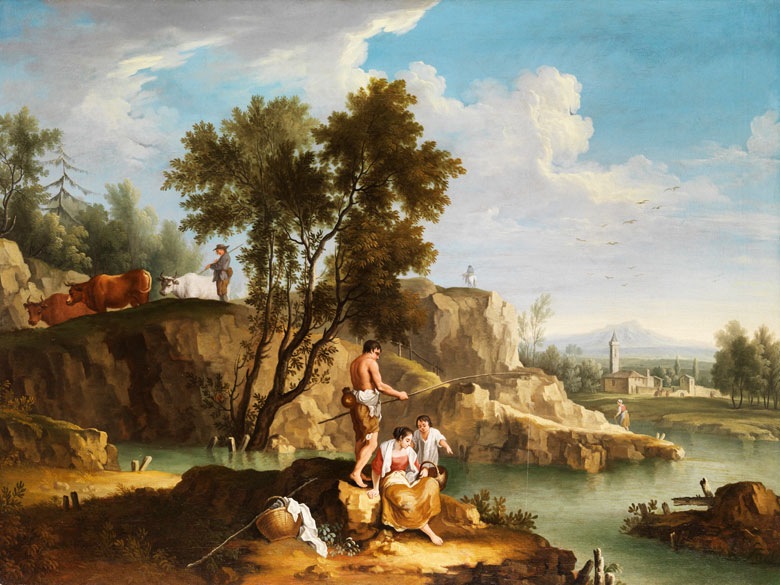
Einzelgemälde eines Paars südlicher Landschaften, Öl auf Leinwand, doubliert, 92 x 123 cm Felsenhügel mit zentralem Baum, an einem Wasserlauf mit Angler, sitzender Frau und Kind, im Hintergrund ein Hirte die Kühe heimtreibend, rechts hinten Dorf mit Campanile